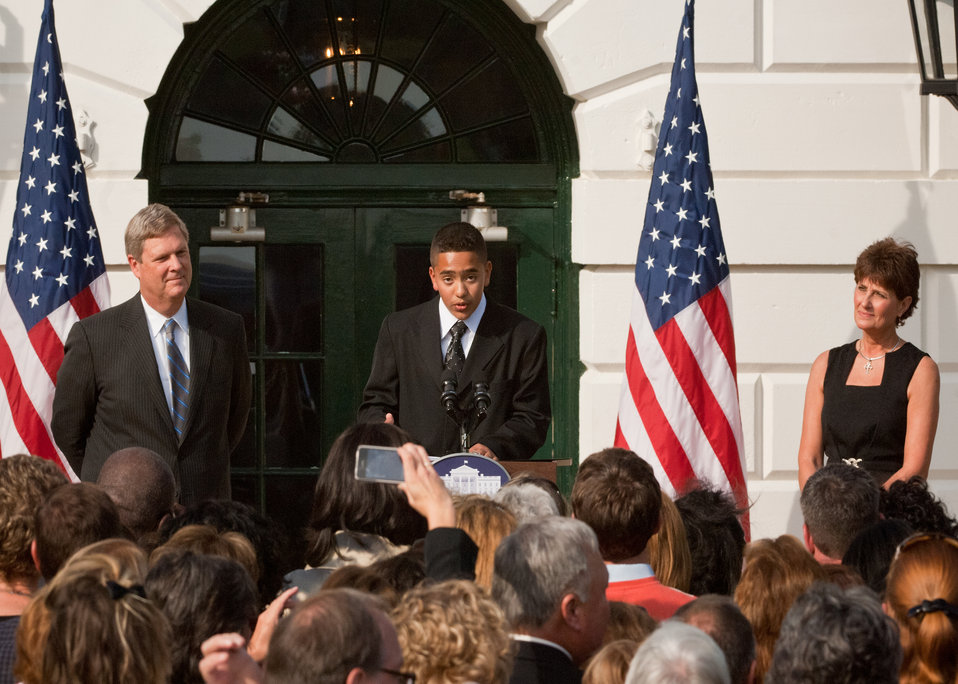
Alex Roman, Walsh Elementary School, Chicago, Illinois explained how he is eating healthier meals and exercising more due to the HealthierUS Schools Challenge prior to introducing First Lady Michelle Obama at a reception on the South Lawn of the White House in Washington, DC, on Monday, October 17, 2011 to honor the winners of the HealthierUS Schools Challenge. Behind Roman from the left are Agriculture Secretary Tom Vilsack, and Becky Bounds, Lamar County Schools, Mississippi. Agriculture Secretary Tom Vilsack and First Lady Michelle Obama hosted the reception to honor the over 1200 winners in the HealthierUS Schools Challenge that met the First Lady’s goal to double the number of participants in the HealthierUS School Challenge in a year. In February 2010, First Lady Michelle Obama introduced “Let’s Move” incorporating the HealthierUS School Challenge into her campaign to promote a healthier generation of children. The HealthierUS School Challenge recognizes elementary, middle and high schools nationwide that create healthier school environments by providing exceptional nutrition education, nutritious food and beverage choices, physical education and opportunities for physical activity. Since the beginning of the HealthierUS School Challenge in 2004, awards have been given to schools in 44 states. As of September 28, 2011, there are 1631 schools certified. A tool kit on how to become a Healthier U.S. School can be found at www.fns.usda.gov.